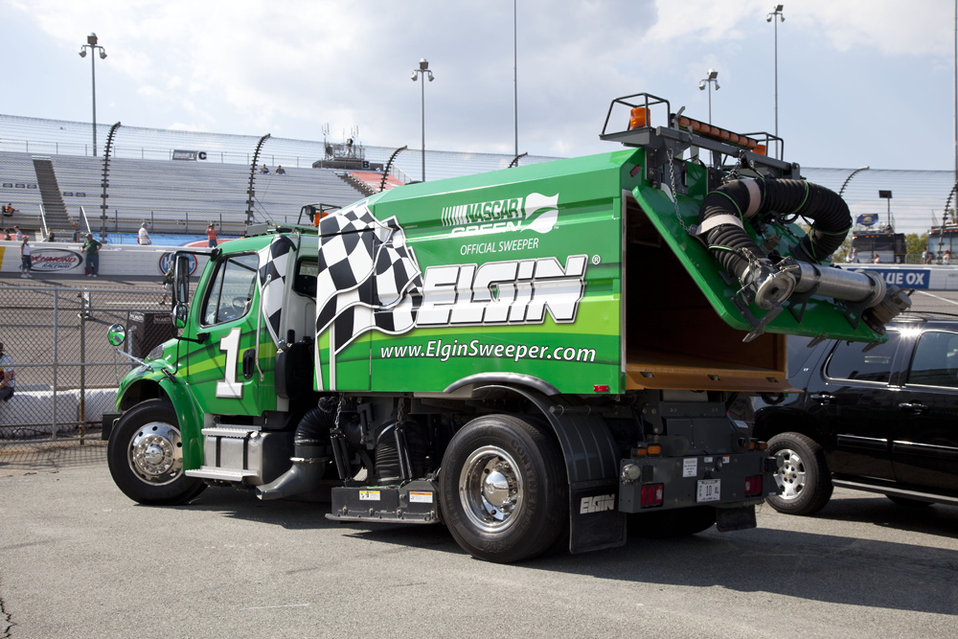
As part of its green efforts, NASCAR has partnered with Elgin Sweeper to save jet fuel and reduce NASCAR's carbon footprint. The Elgin Sweeper is used to help clean and dry tracks during a race's caution period.